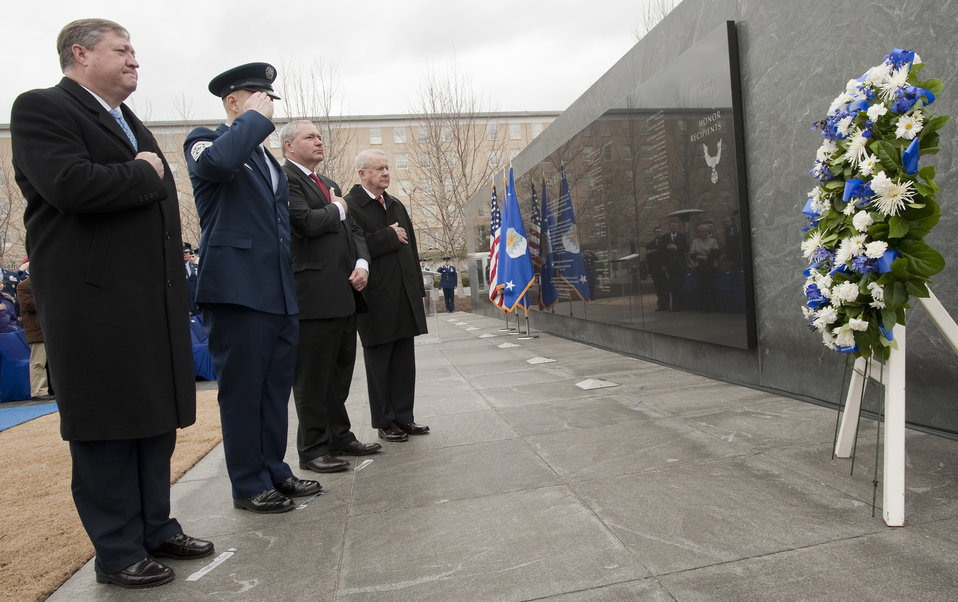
CMSgt Etchberger unveiling ceremony

Secretary of the Air Force Michael Donley (from left), Chief Master Sgt. of the Air Force James Roy, Corey Etchberger, and retired Chief Master Sgt. John McCauslin pay their respects as Taps is played during a ceremony March 11, 2011, to unveil Medal of Honor recipient Chief Master Sgt. Richard L. Etchberger's name which was added to the Air Force Memorial in Arlington, Va.